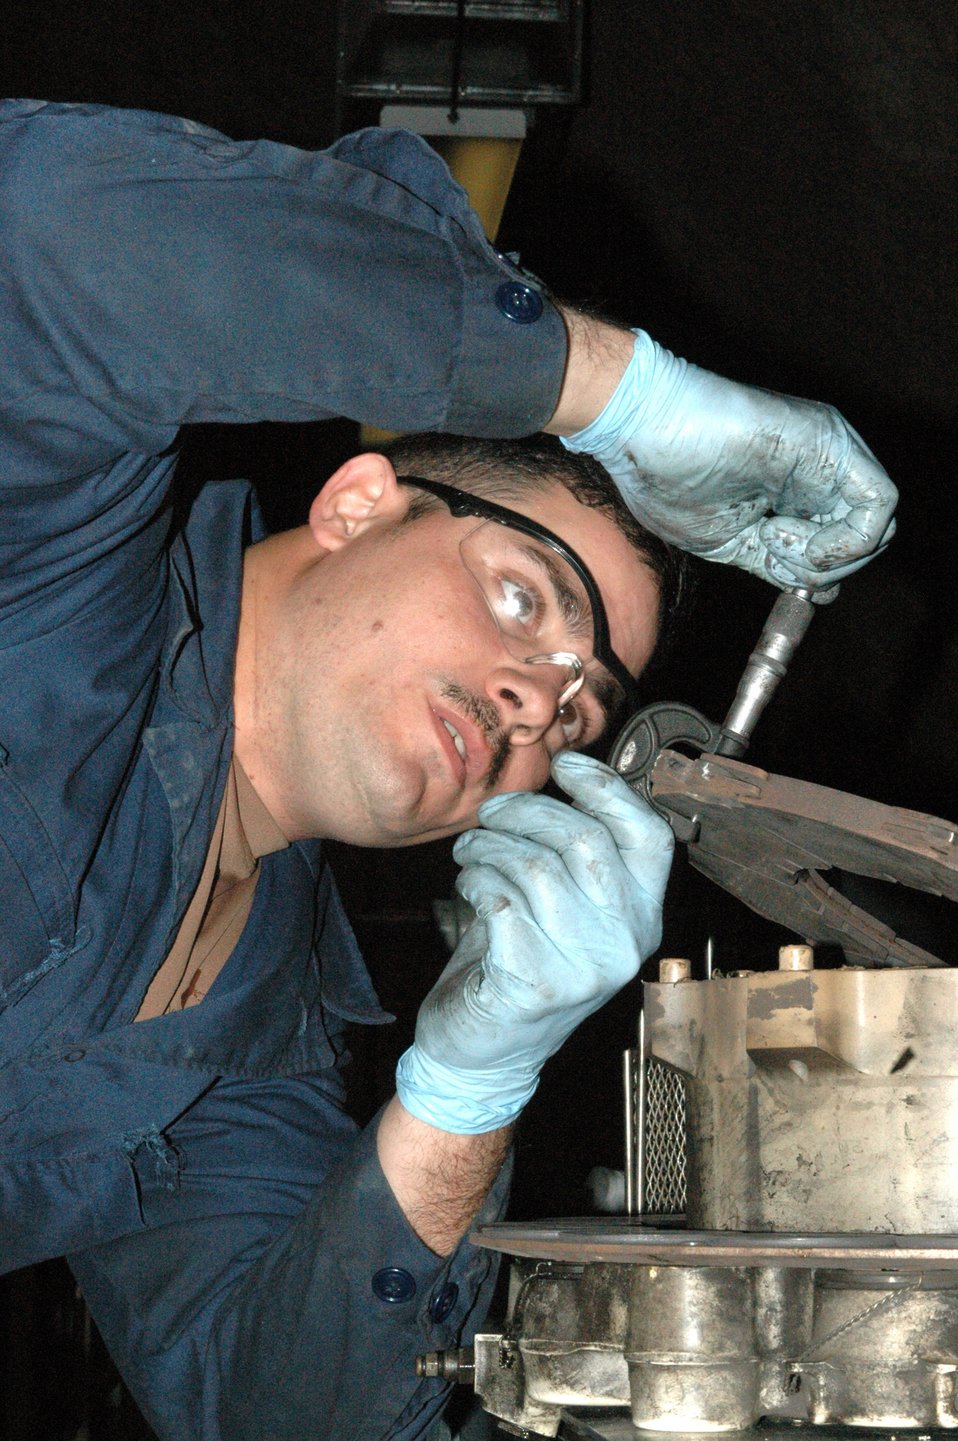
Intermediate repair facility keeps tankers flying

Sgt. Christopher Crespo measures the thickness of a new brake puck on a KC-135 Stratotanker brake Feb. 26 at the only in-theater central intermediate repair facility in Southwest Asia. The CIRF makes it possible for the brakes on KC-135s to be repaired immediately, saving time and money that would be spent shipping the parts to and from the United States.